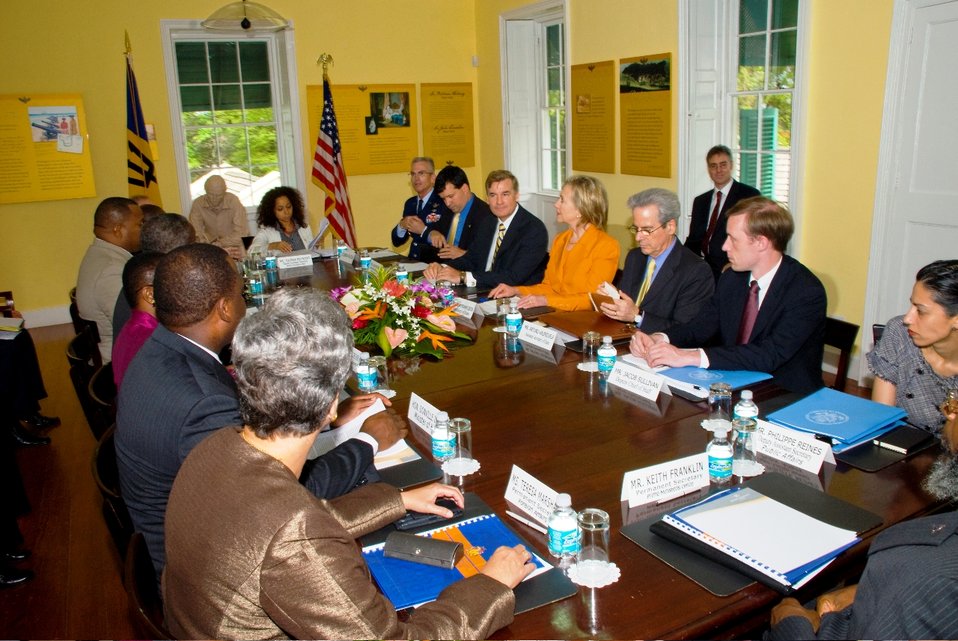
Acting Prime Minister Freundel Stuart Holds Bilateral Meeting With Secretary Clinton

Acting Prime Minister Freundel Stuart holds a bilateral meeting with U.S. Secretary of State Hillary Rodham Clinton in Bridgetown, Barbados, on June 10, 2010.